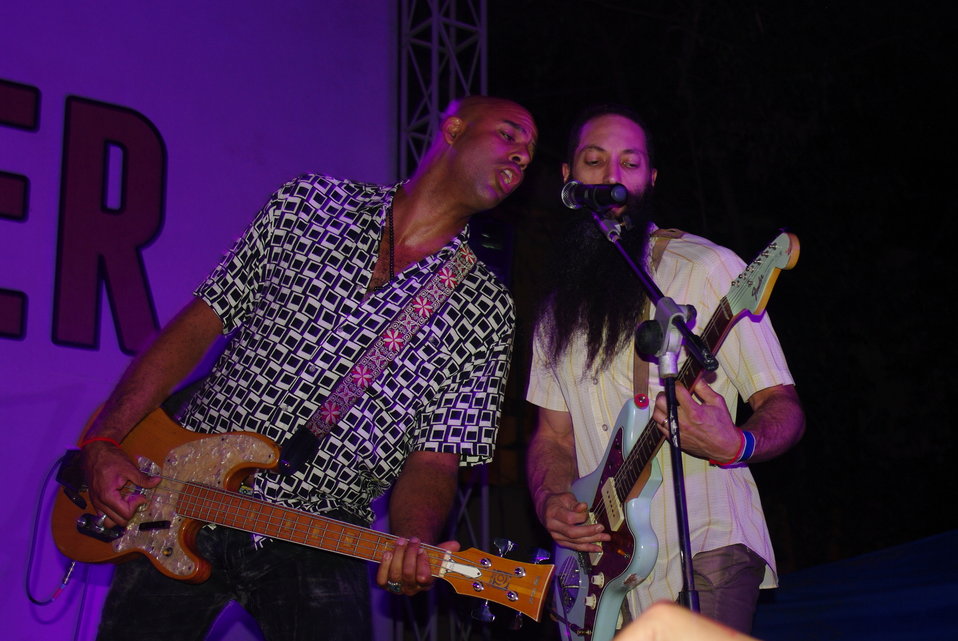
PEPFAR, U.S. Embassy Host Dengue Fever Concert in Hanoi